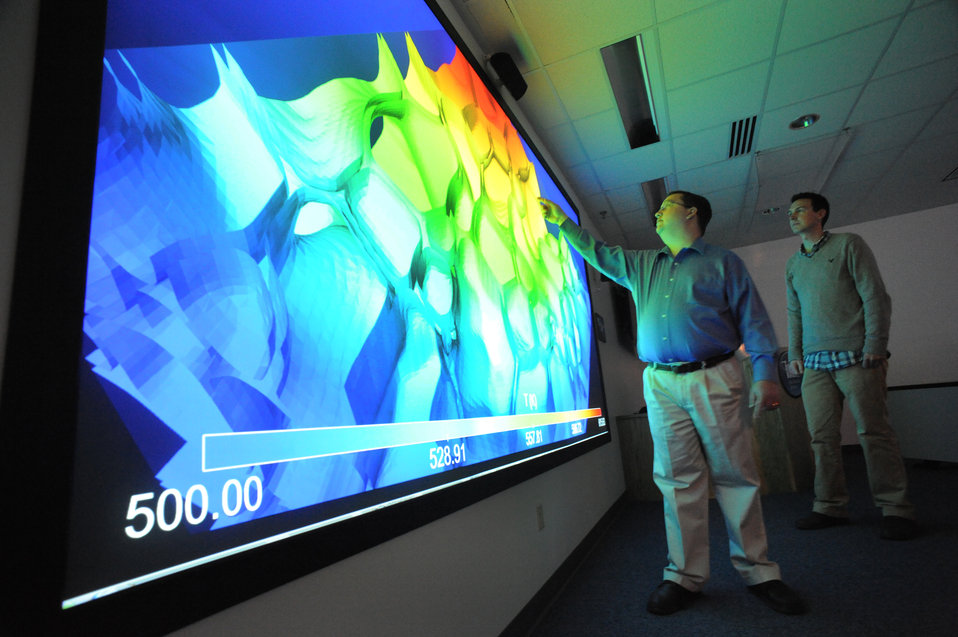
The MARMOT application runs on Idaho National Laboratory's Multiphysics Object Oriented Simulation Environment (MOOSE) simulation platform and models microstructural changes in nuclear fuel during the fission process.